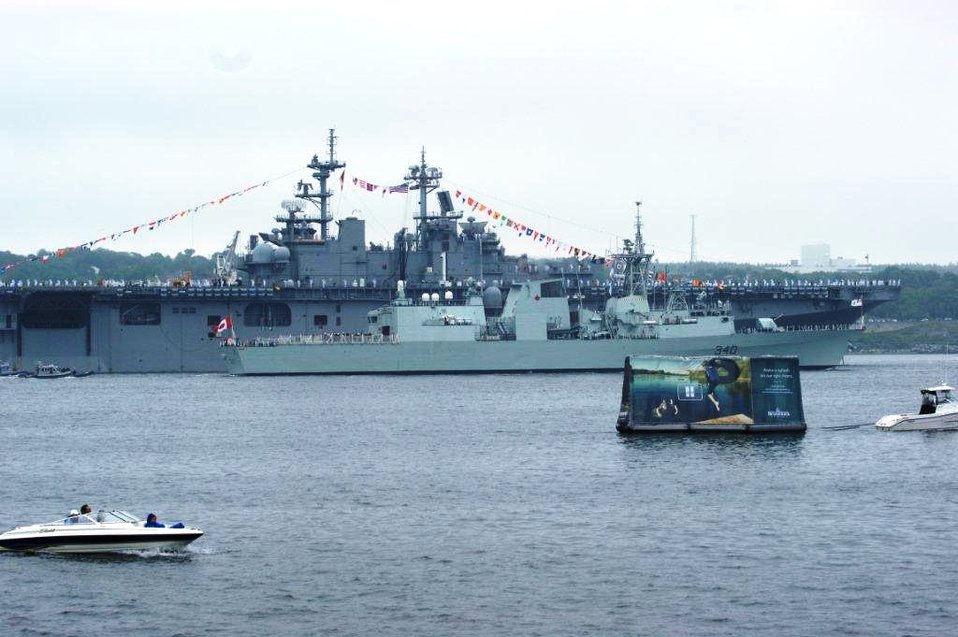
Queen Elizabeth and Prince Philip Are Greeted Aboard the HMCS St. John's By U.S. Sailors, Including Admiral Gary Roughead and Ambassador Jacobson and His Wife Julie Aboard the USS Wasp

Queen Elizabeth and Prince Philip are greeted aboard the HMCS St. John's USS Wasp by U.S. sailors, including Admiral Gary Roughead, the U.S. Chief of Naval Operations, and U.S. Ambassador to Canada Mark Jacobson and his wife, Julie Jacobson, in Halifax, Nova Scotia, Canada, on June 30, 2010.